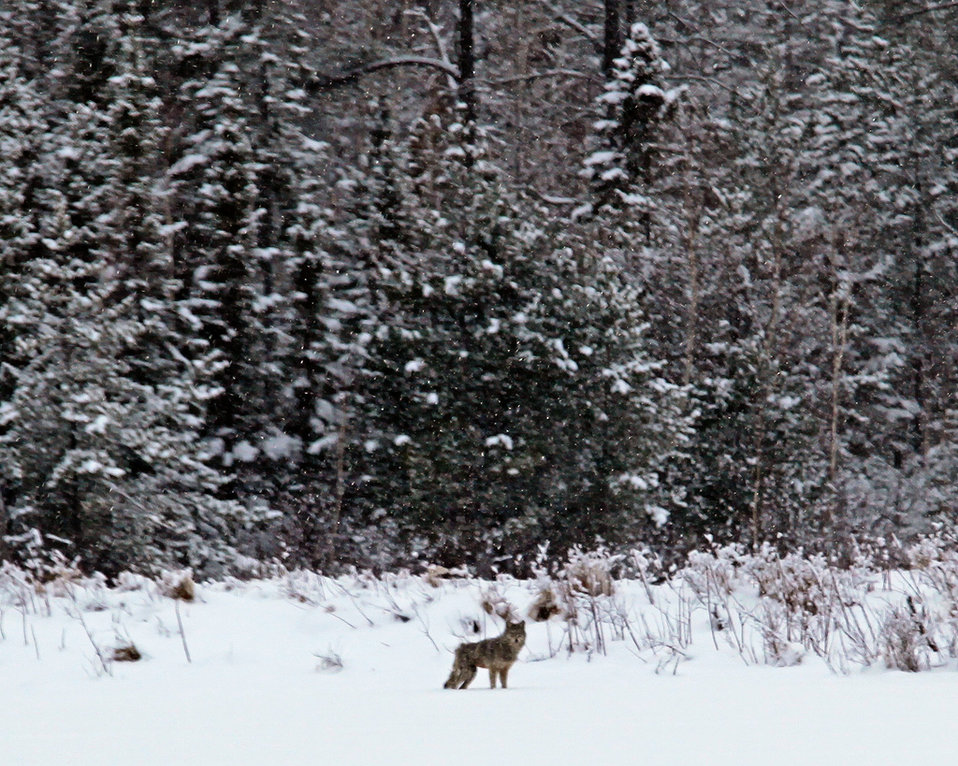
January

wolf in snowstorm
Seney National Wildlife Refuge, MI